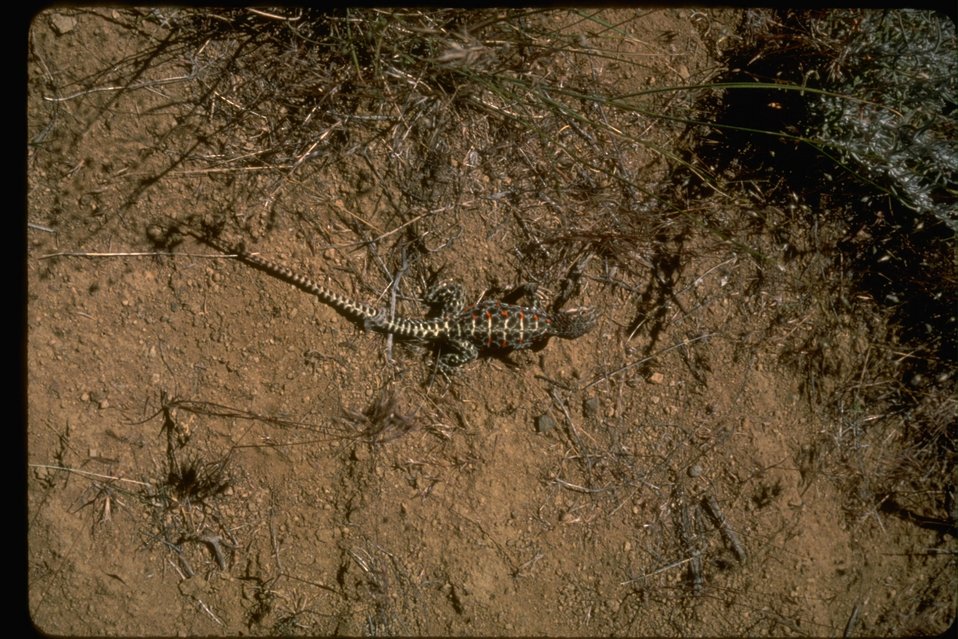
Undetermined.